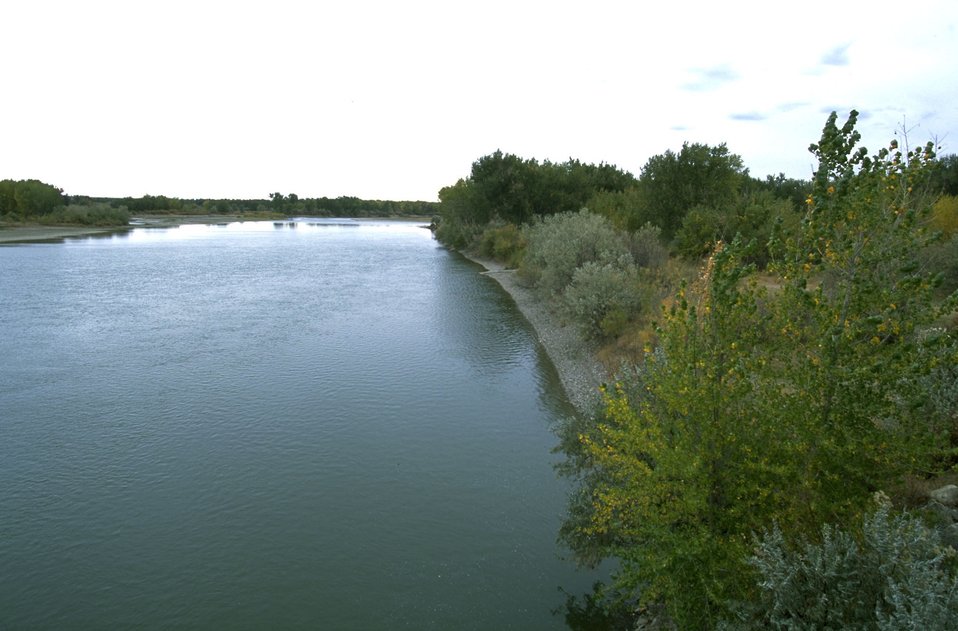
Main Channel of the Yellowstone River viewed from the Howrey Island Recreation Area